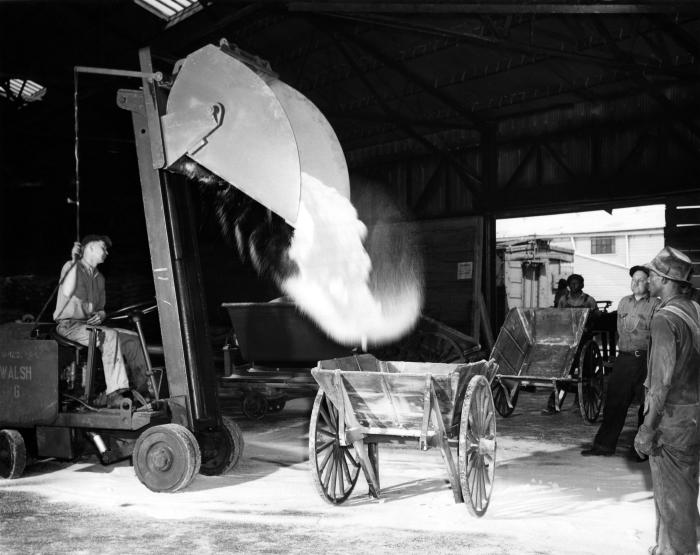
This April 1941 historical photograph was provided by the Center for Disease Control's (CDC), National Institute for Occupational Safety and Health (NIOSH). It depicted a number of industrial workers in Lee County, Alabama who were in the process of loading crushed limestone into pushcarts by using an overhead bucket shovel, which when unloaded, as was the case in this example, a large debris-could ensued, exposing onlookers to irritating airborne particulates. The potential worker health problems associated with crushed limestone, also known as calcium carbonate, includes respiratory hazards when inhaled, and dermatitis due to mechanical abrasion resulting from skin contact. Prolonged exposure may cause lung diseases such as 'silicosis'. The men were equipped with inadequate respiratory protection. In the 1940s and 1950s, the Industrial Hygiene Division (IHD) investigated hazards associated with this and other activities involving workplace health hazards.